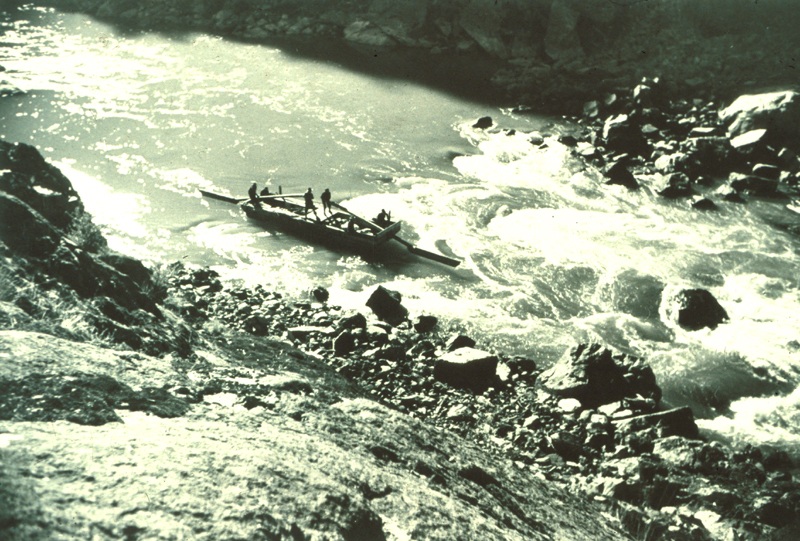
National Geographic Expedition (1935) Lower Salmon River Cottonwood Field Office Upper Columbia Salmon Clearwater District